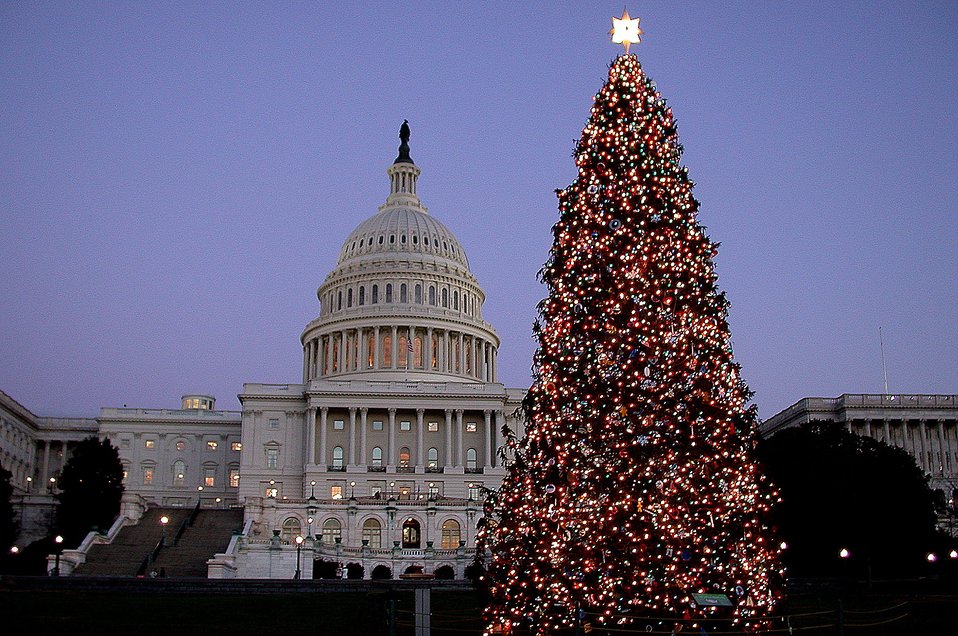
United States Capitol building.